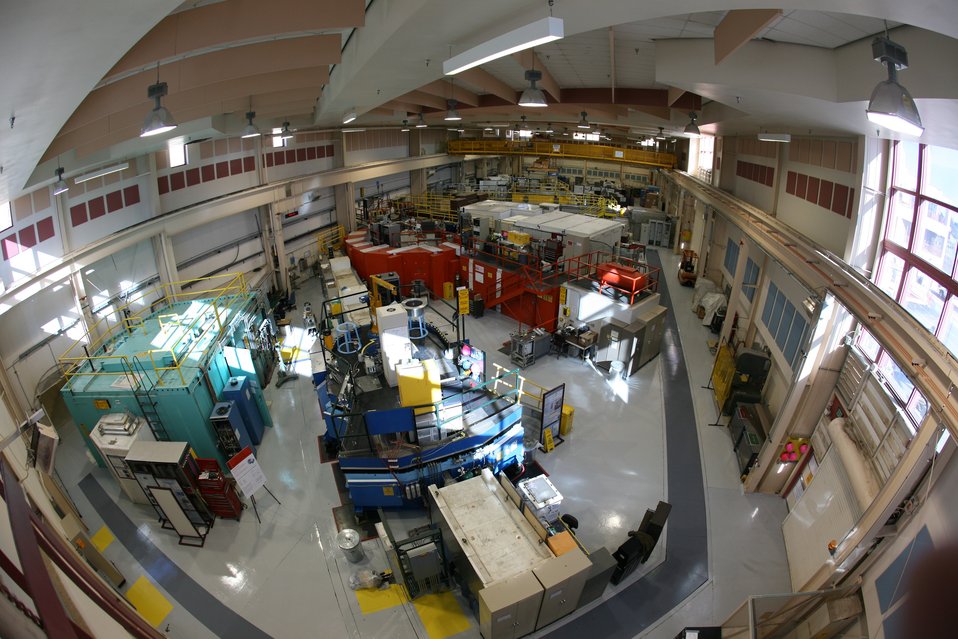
NEUTRON SCATTERING INSTRUMENTS IN THE LUJAN CENTER BEAM ROOM.

The Lujan Neutron Scattering Center is a major international user facility for studying the structure and dynamics of advanced materials and biological macromolecules. The center delivers one of the highest-peak neutron fluxes in the world for research in materials science and engineering. Magnetic materials, polymers, chemistry, earth and geology, structural biology and condensed matter physics.